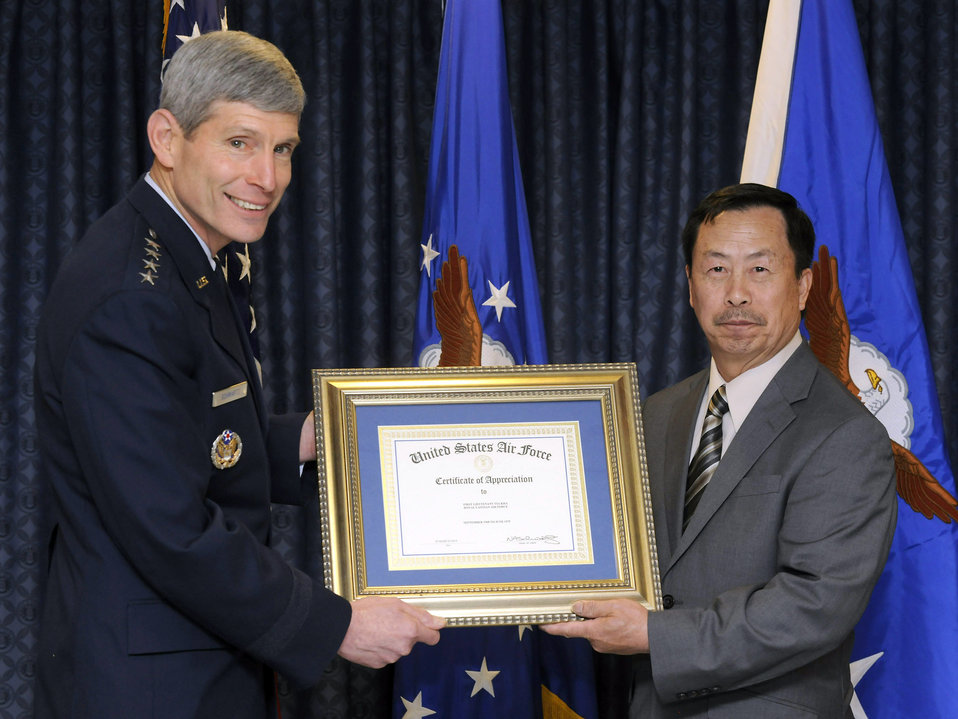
Hmong-American patriot recognized by Air Force chief of staff

Yia Kha holds a certificate of appreciation he received from Air Force Chief of Staff Gen. Norton Schwartz during a ceremony March 31, 2010, in the Pentagon's Airmen's Hall. Mr. Kha received a certificate of appreciation from General Schwartz for his role in aiding forward air controllers during the Vietnam War.